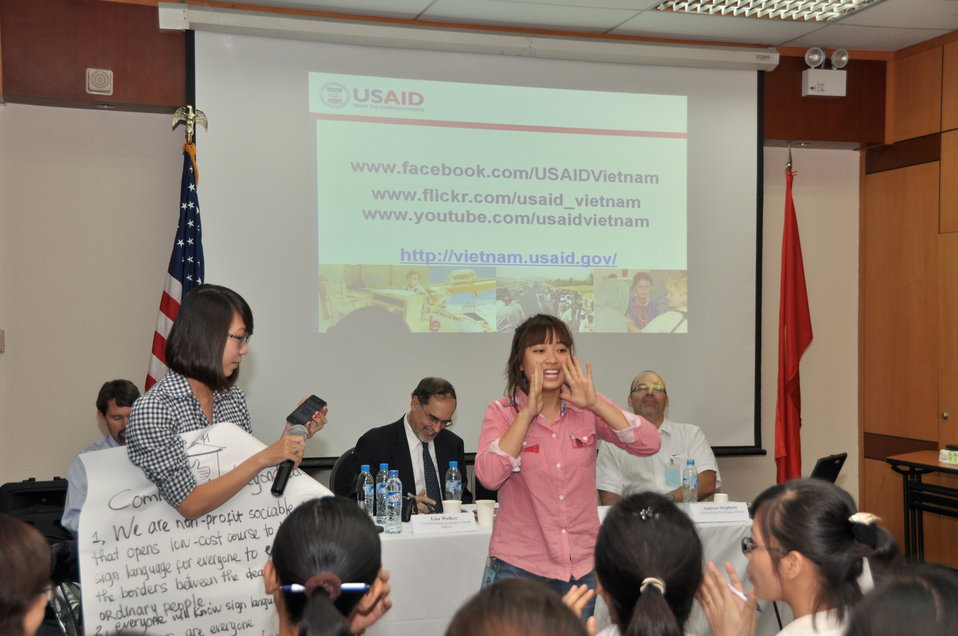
Vietnamese university students join the Business Plan Mashup exercise

Photo: @USAIDVietnam, November 16, 2012